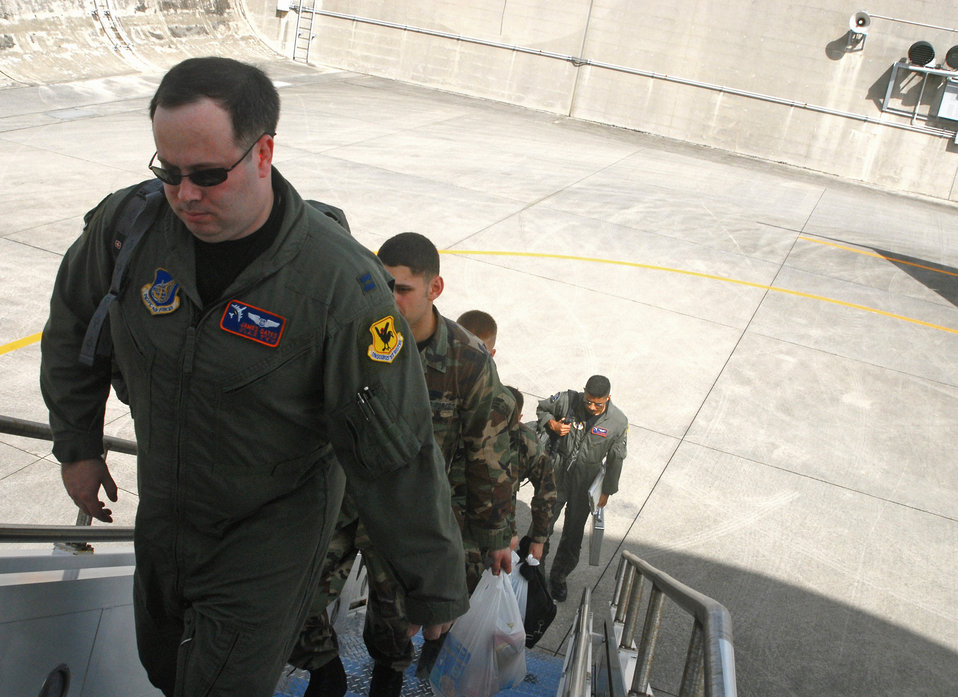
Military members show their edge during Keen Sword

Members of the 961st Airborne Air Control Squadron board an E-3 AWACS at Kadena Air Base, Japan, Nov. 5 to participate in exercise Keen Sword. Several hundred Kadena members are participating in the bilateral joint service exercise.